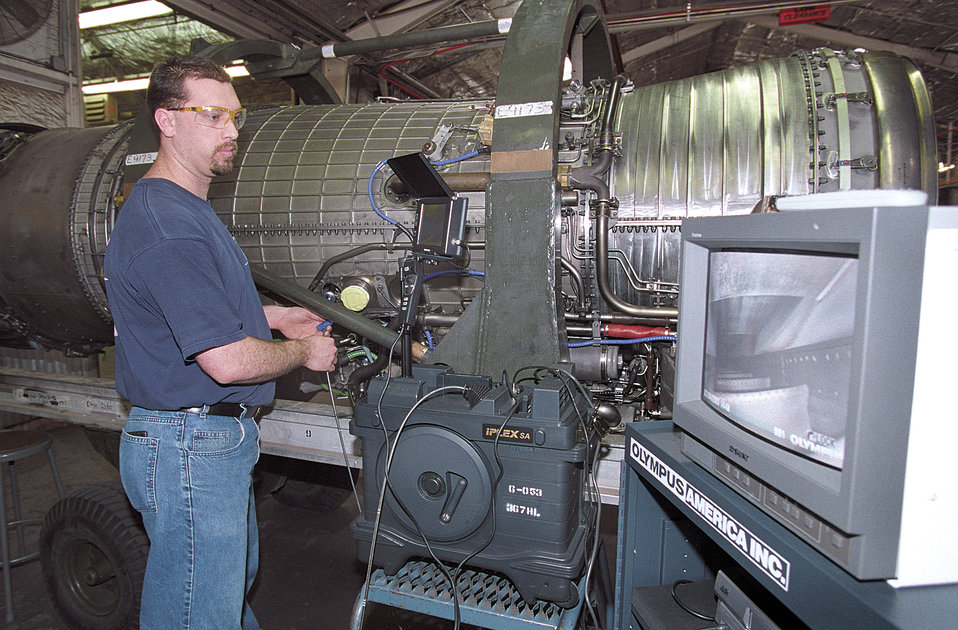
Borescope

TINKER AIR FORCE BASE, Okla. -- Randy Harris, an inspector and mechanic, gets a magnified view of an engine's high-pressure turbine area with a new borescope. Digital borescopes are allowing mechanics to more efficiently and accurately inspect aircraft engines here.